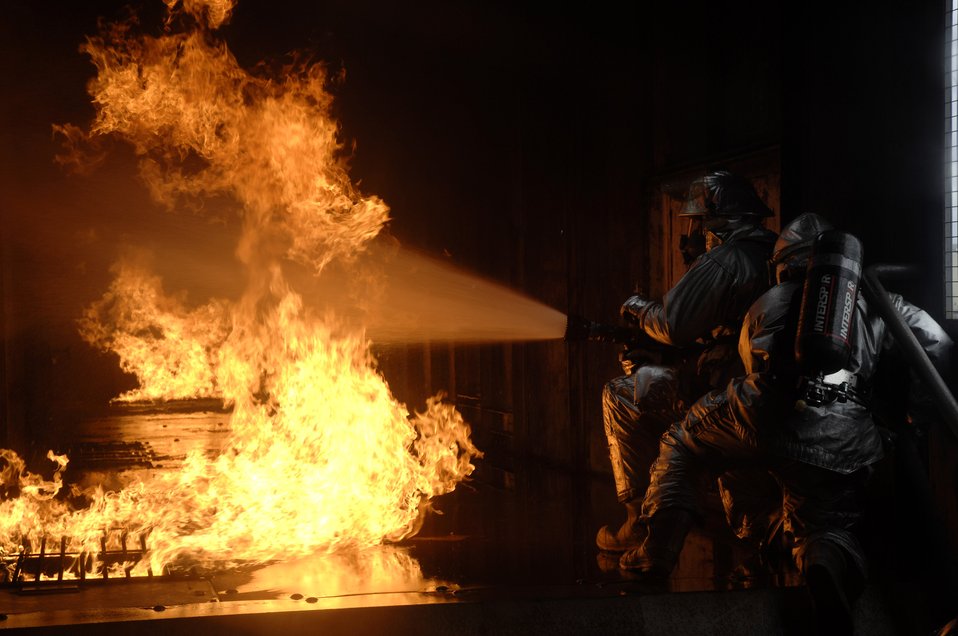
Battling the heat

48th Civil Engineer Squadron firefighters extinguish a simulated battery fire inside an aircraft fire trainer March 8 at Royal Air Force Mildenhall, England. Firefighters must train constantly to stay proficient in their aircraft rescue and firefighting skills.